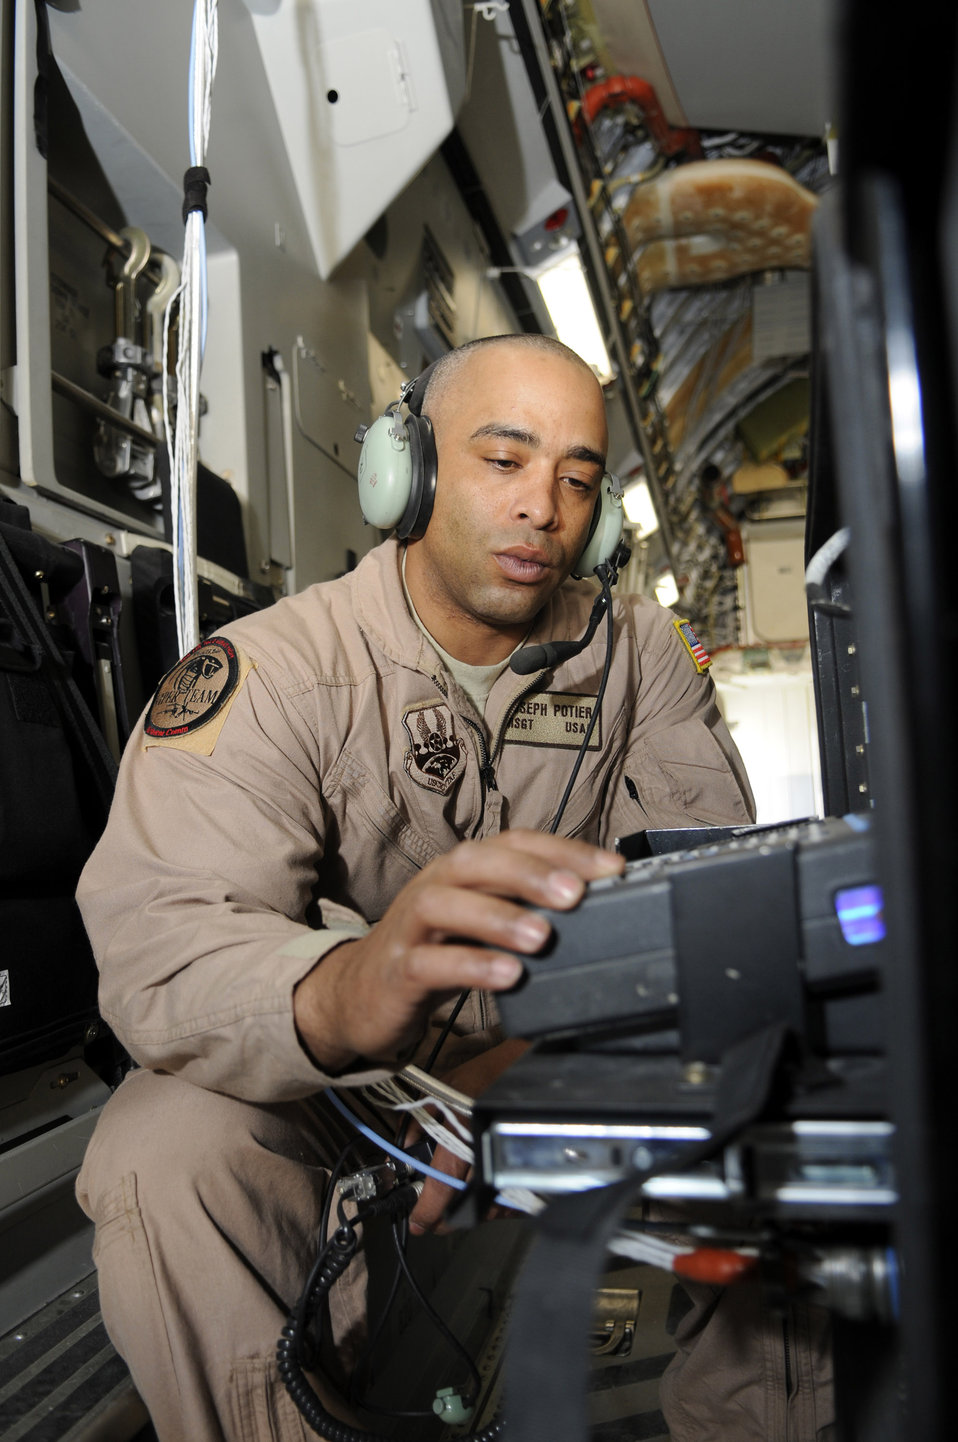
Vipers secure communication for DVs

Master Sgt. Joseph Potier talks to the communications focal point while on a C-17 Globemaster III Feb 19 in Southwest Asia. The sergeant performs function checks to ensure distinguished visitors can make secure calls through the Viper system. Sergeant Potier is with the 379th Expeditionary Communications Squadron and is deployed from Lackland Air Force Base, Texas.